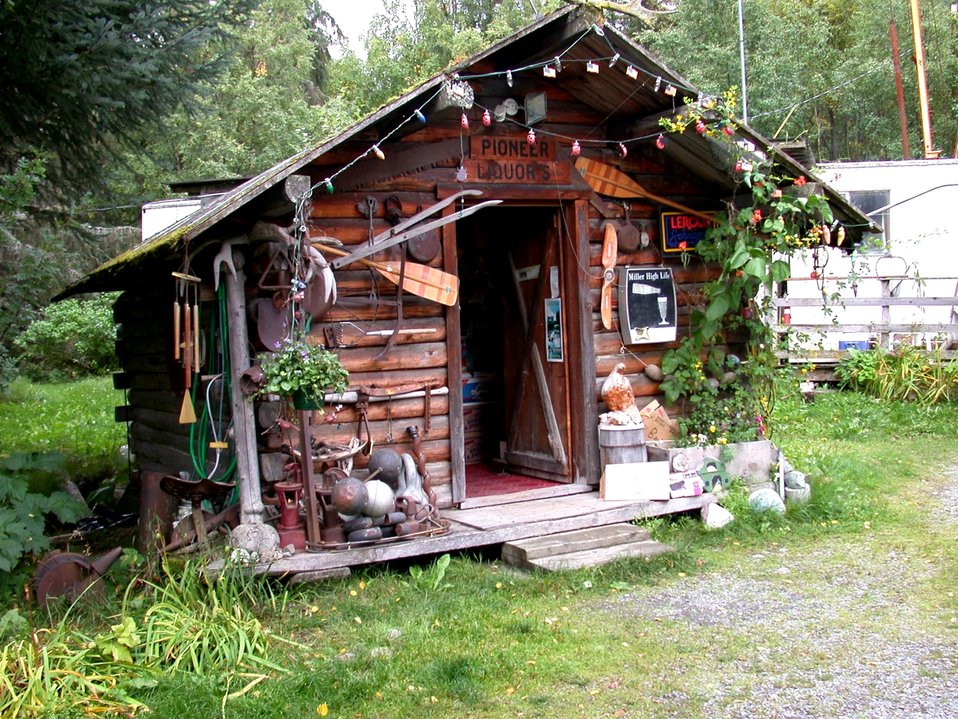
Pioneer Liquors in the vicinity of Seward.